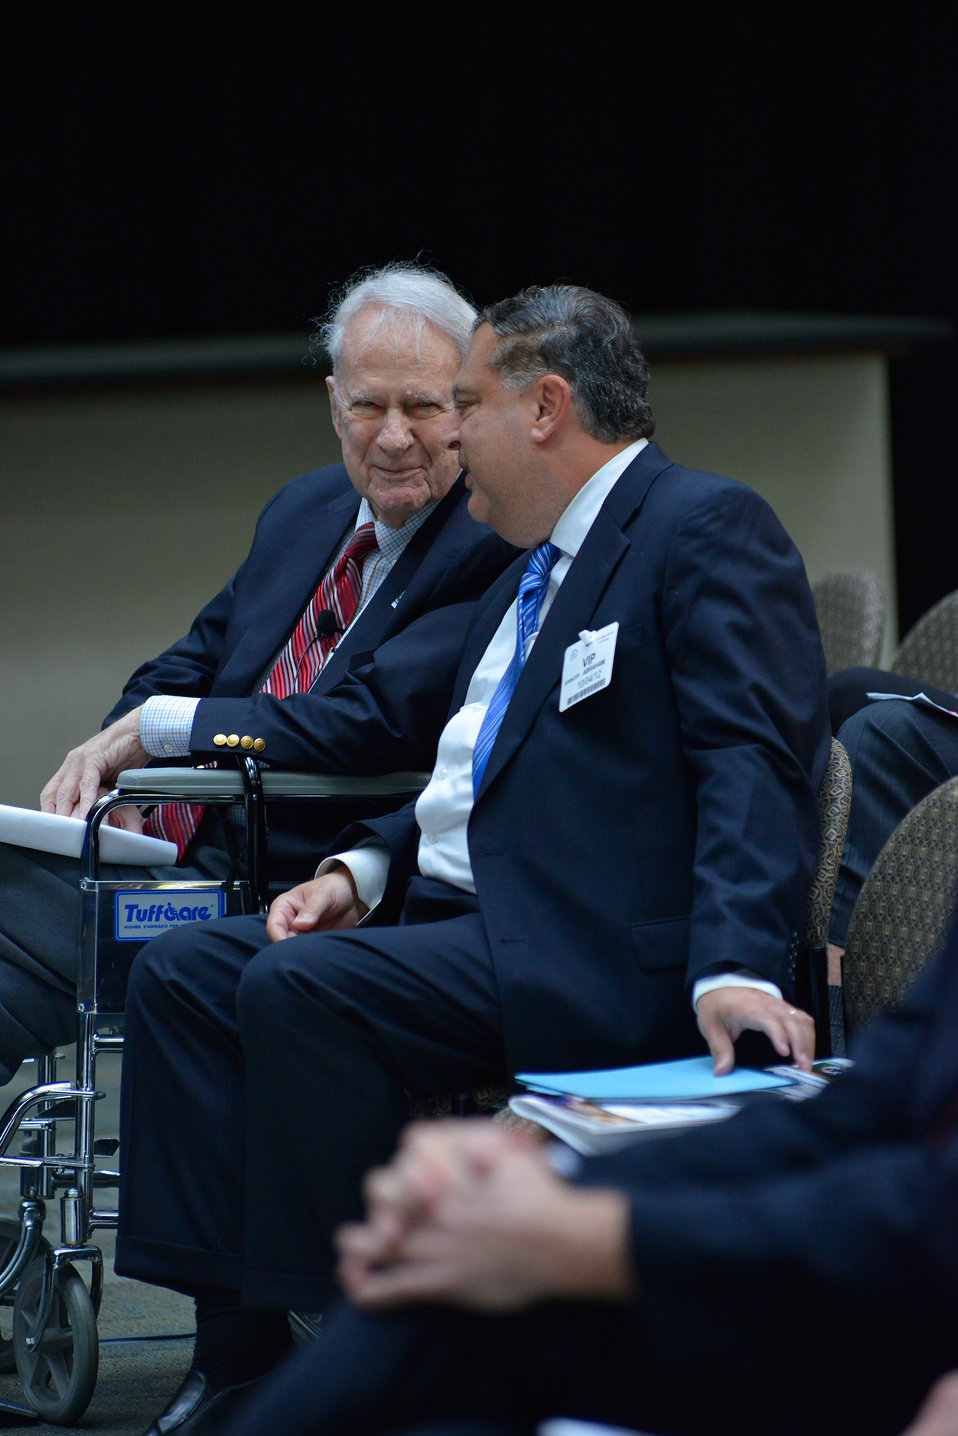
Former Secretaries James Schlesinger, first Secretary of Energy, speaks with Spencer Abraham, tenth Secretary of Energy.